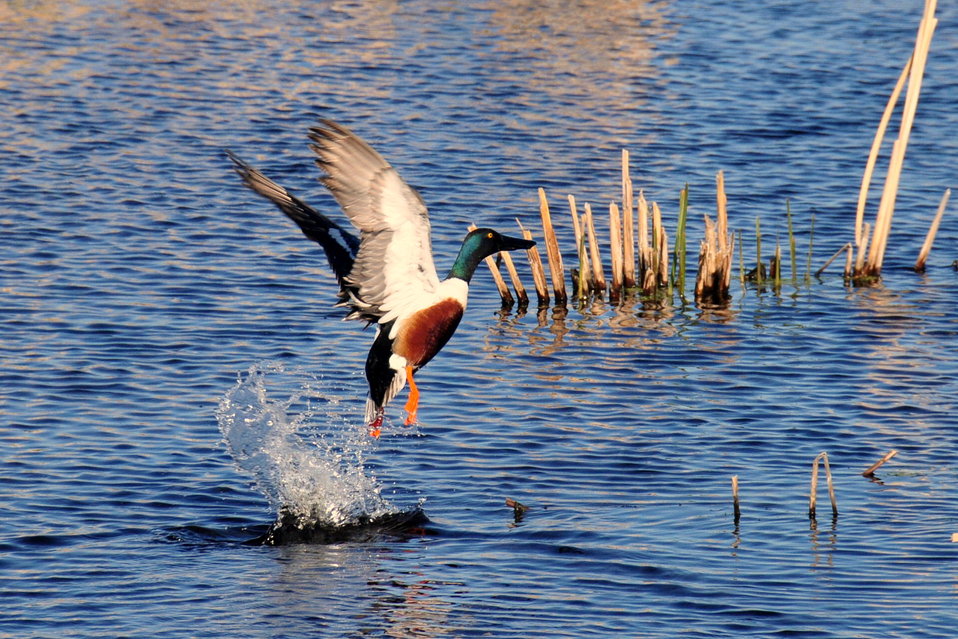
Northern shoveler drake taking flight Sand Lake WMD.